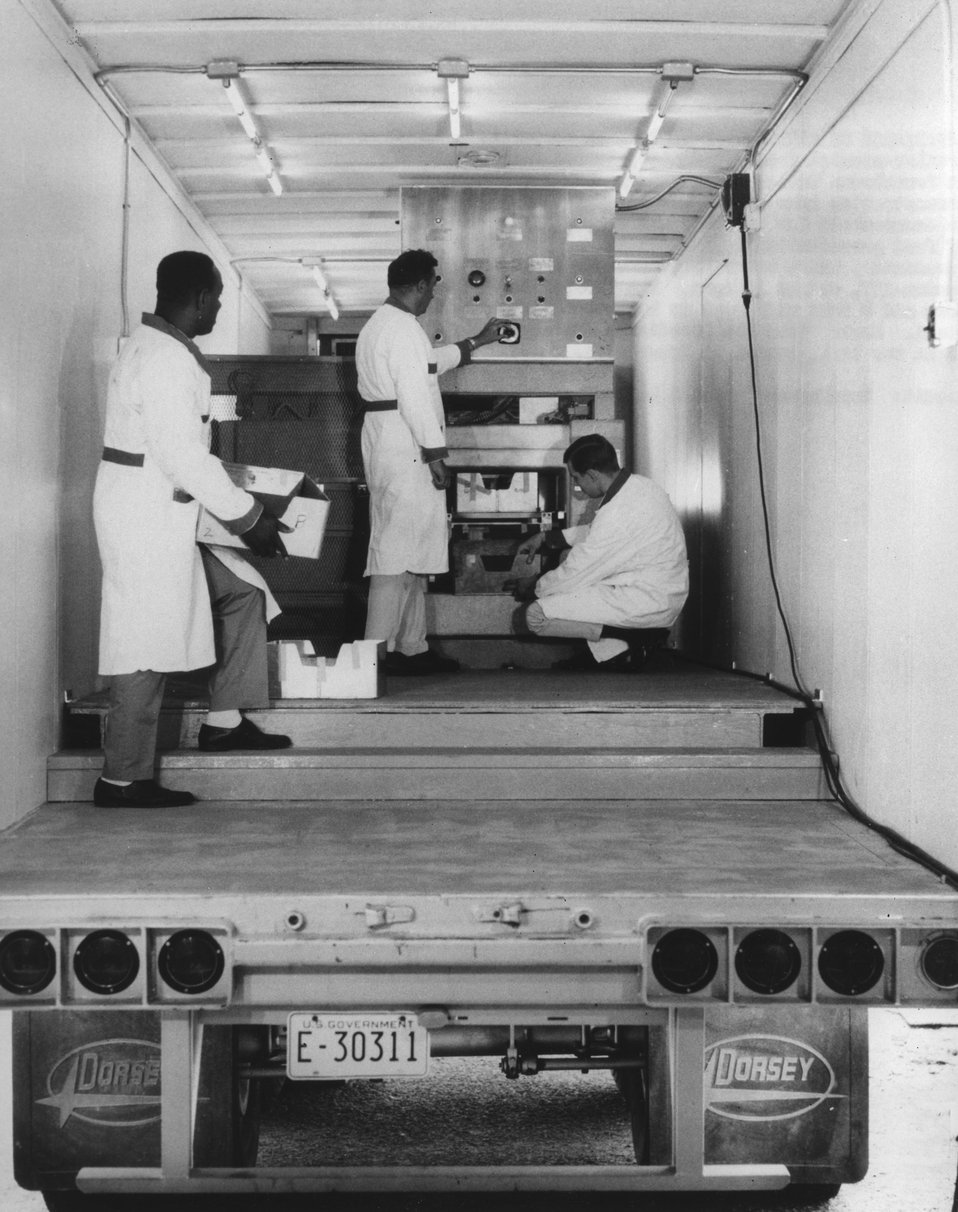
A portable, trailer-mounted food irradiation, loaded and tested at Brookhaven National Laboratory, began a 2-year demonstration tour of the Nation during mid-1967. c. 1968